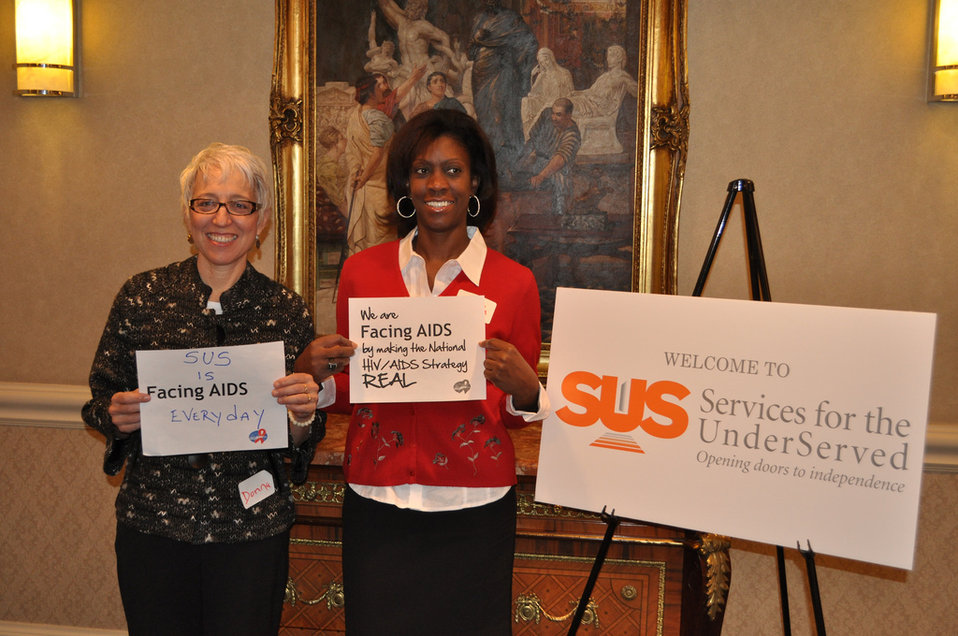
We are Facing AIDS through NHAS-06